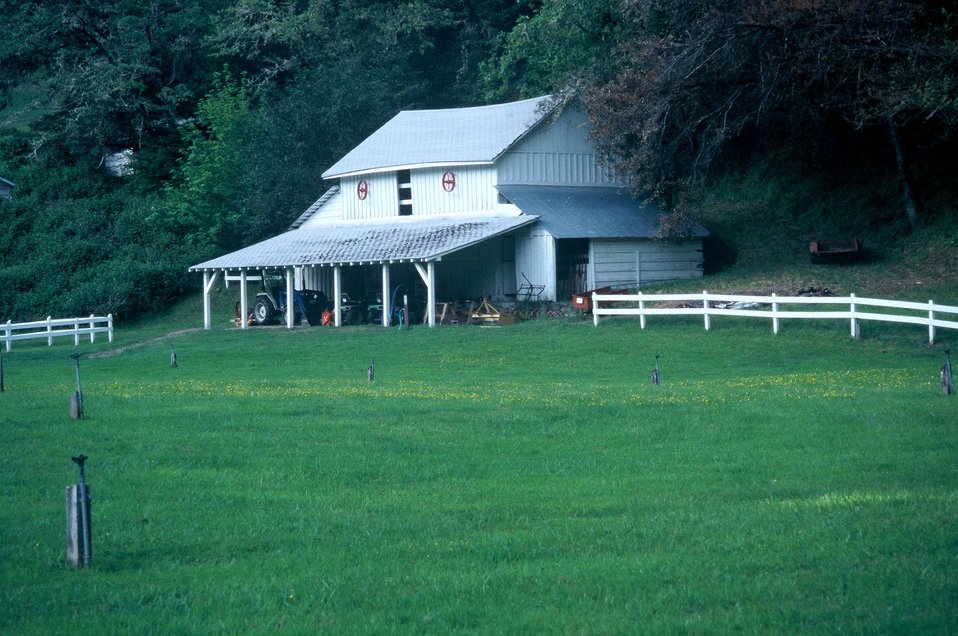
Wild section of the Rogue River from Grave Creek to Foster Bar May 19 to May 22.